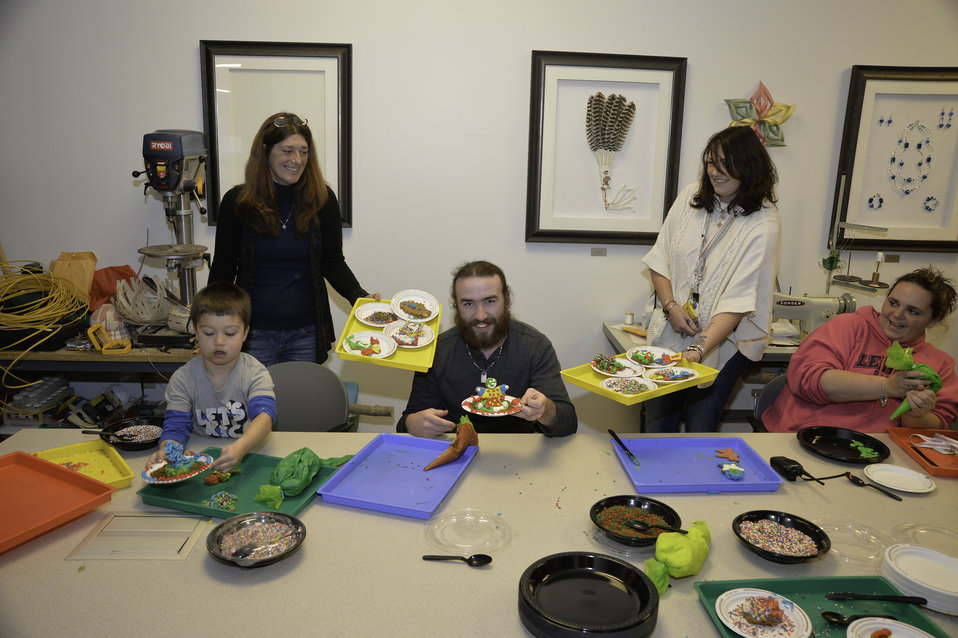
Mohegan youth participate in after school activities at the Mohegan Tribe Community Center and Government Building in Uncasville, CT on Nov. 19, 2013. A U.S. Department of Agriculture (USDA) Rural Development (RD) Community Facility Loan was provided to the Mohegan Tribe for the construction of the Mohegan Tribe Community Center and Government Building in Uncasville, CT. USDA’s RD Community Facilities Programs makes and guarantees loans to develop essential community facilities in rural areas and towns of up to 20,000 in population. Loans and guarantees are available to public entities such as municipalities, counties, parishes, boroughs, and special-purpose districts, as well as to non-profit corporations and tribal governments. The 160,000 square foot building Center hosts an exhibit celebrating federal recognition, history of Mohegan Chiefs, a new Library and Archives space, new Arts and Crafts room, a new gymnasium, and a new community room to enjoy food and family. The Center will continue the Tribe’s plan for growth and meeting the needs of its members.